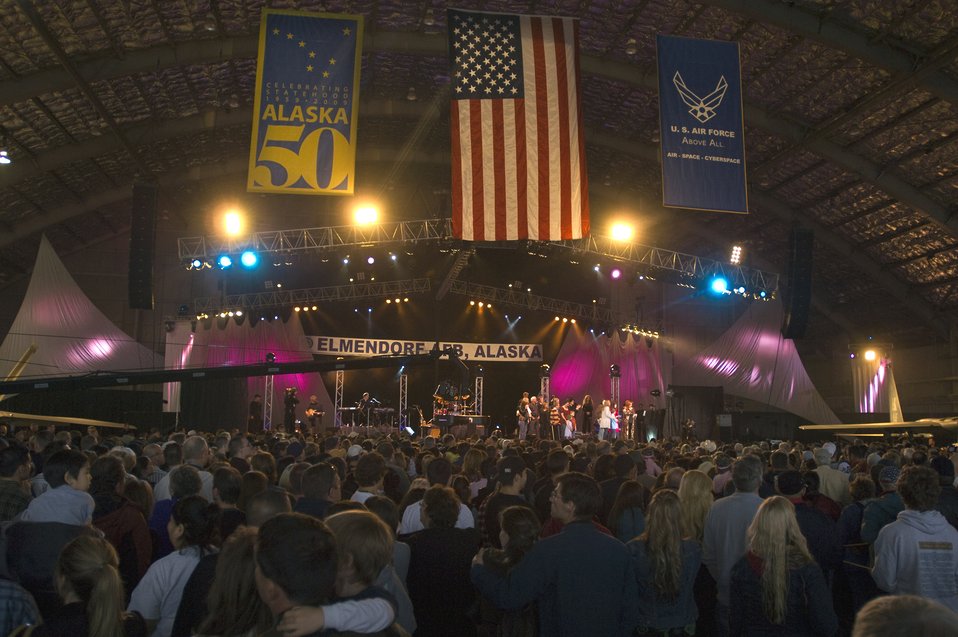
Wynonna headlines concert for military

Wynonna Judd brings family members on stage during a live teleconference with deployed Airmen during Alaska's Operation Gratitude concert June 27 at Elemendorf Air Force Base, Alaska. This concert was the official kick off to the